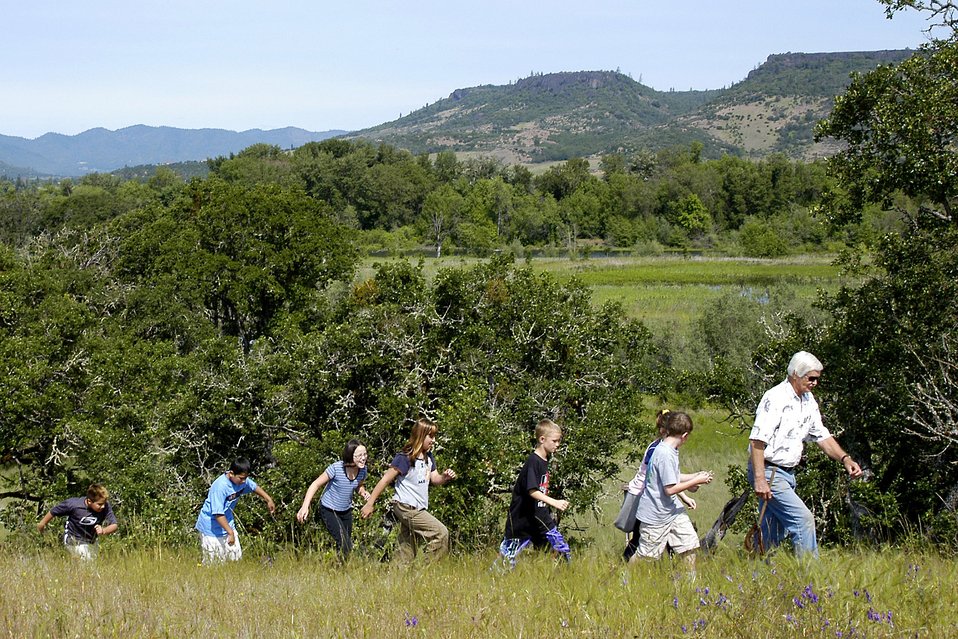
BLM Volunteer, Jim Hutchins, leads an environmental education hike along the Rogue River. Terry Tuttle, Medford People HM